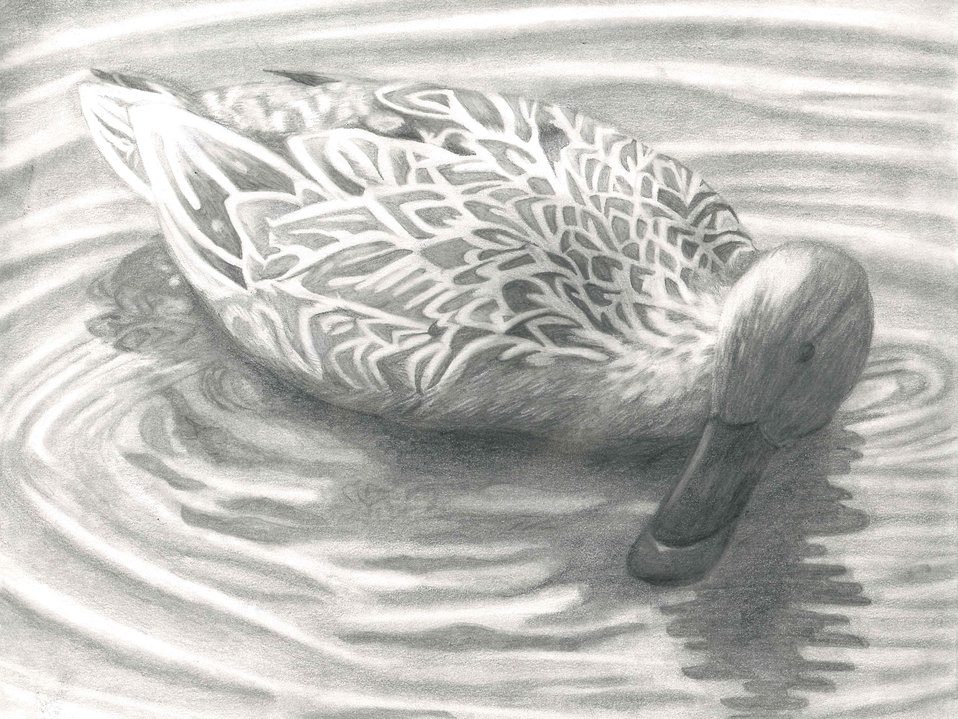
SouthCarolina

2012 Jr Duck Stamp Program
State Best of Show
South Carolina